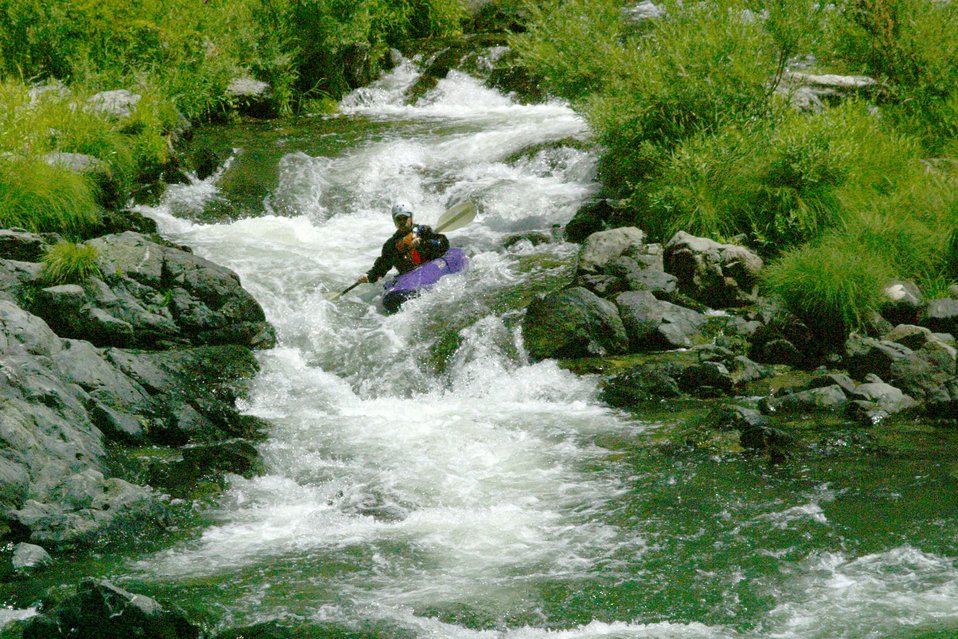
Rainie Falls Fish Ladder